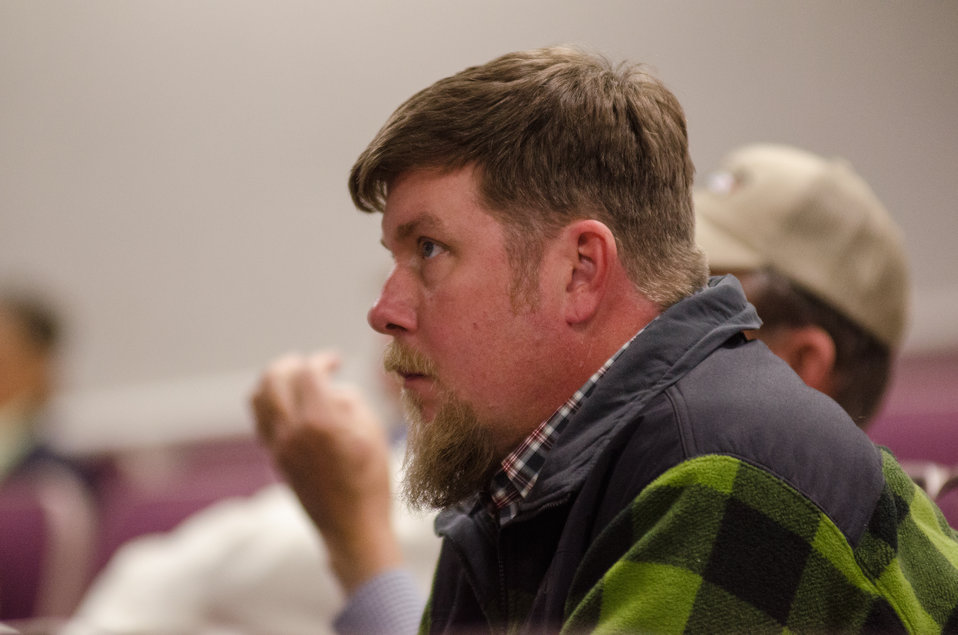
Staffers and farmers came together for the “Virginia State University (VSU), U.S. Department of Agriculture (USDA) and Virginia Farmers Working Together” outreach workshop in the VSU, L. Douglas Wilder building on Thursday, March 7, 2013, in Petersburg, VA. Farmers shared and learned new ways to do more with USDA services, and how to apply for programs that will help grow their business.